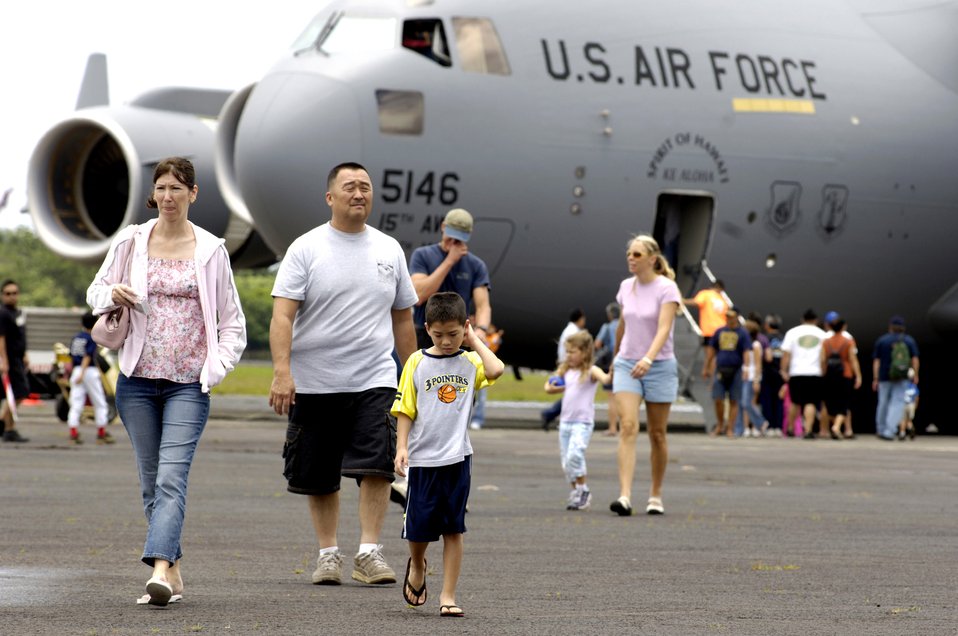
Hawaii Air National Guard hosts open house

Visitors have the opportunity to see Air Force aircraft such as the C-17 Globemaster III on Saturday, May 20, 2006, during an Armed Forces Day air show at Hilo International Airport, Hawaii. The Hawaii Air National Guard hosted the show to give the public a chance to view various aircraft stationed in Hawaii and to generate public interest in the military.